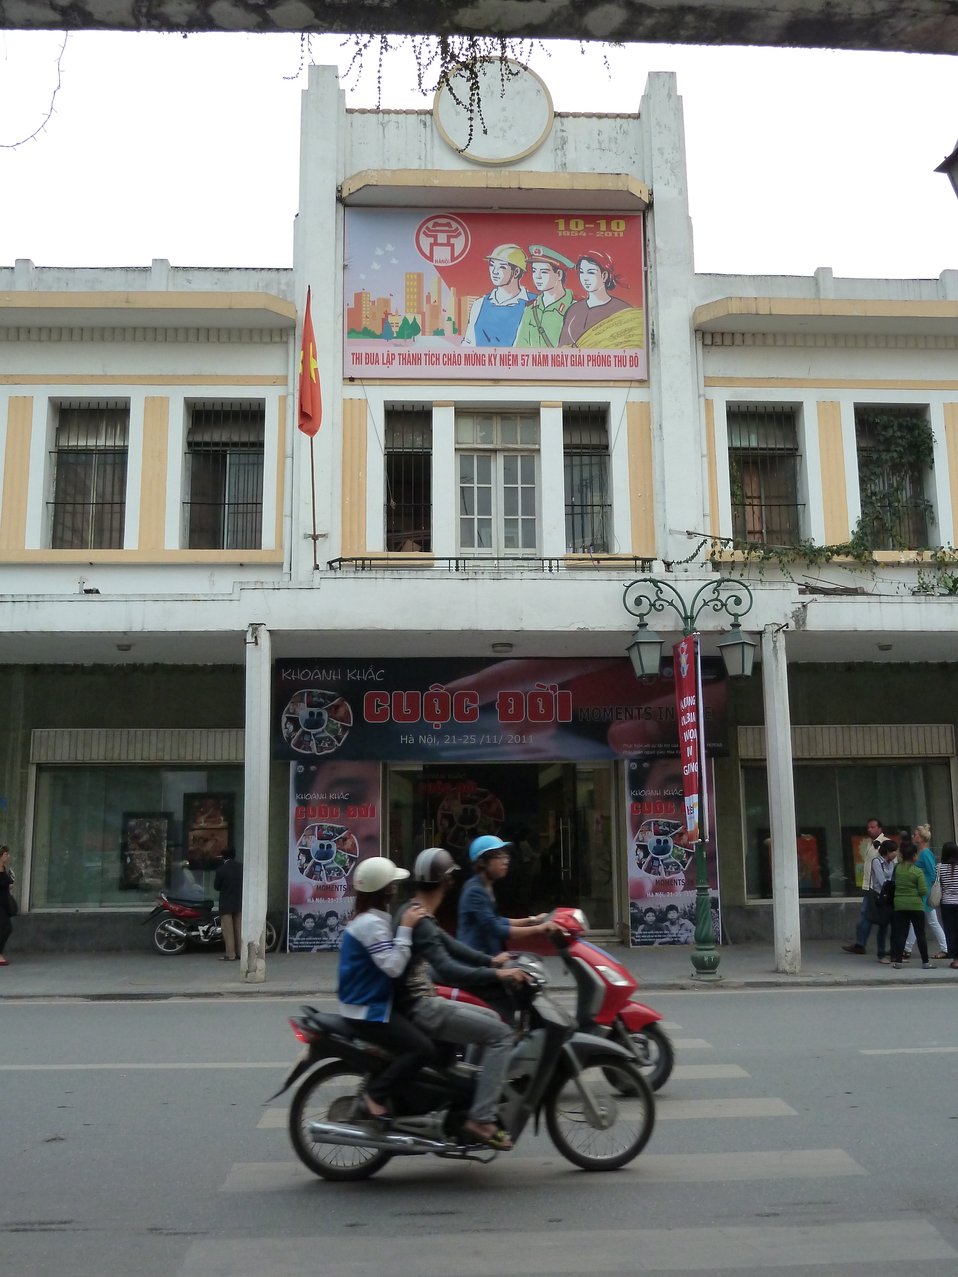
Moments in Life Exhibit: PEPFAR